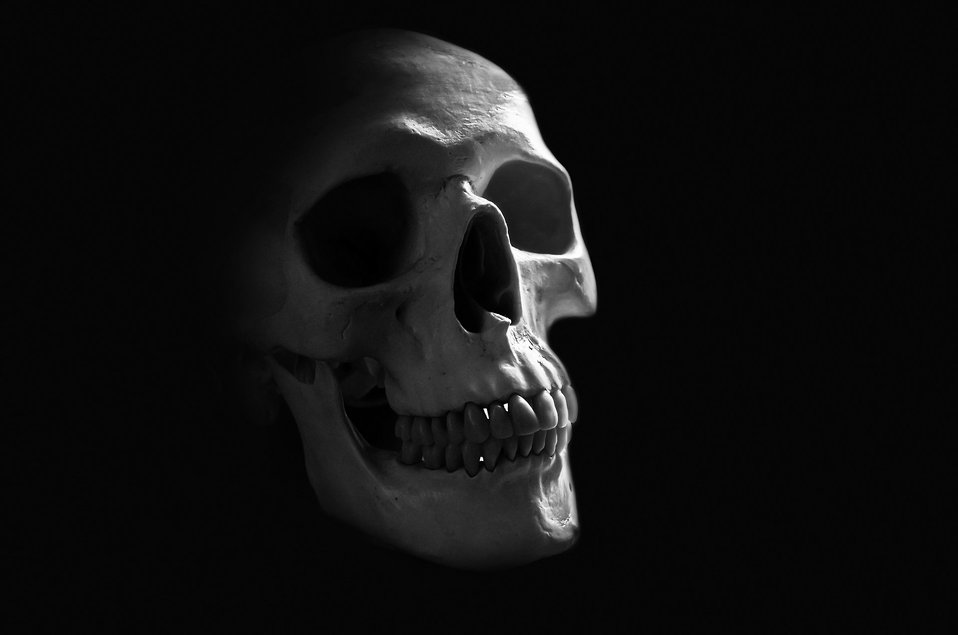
Human skull.